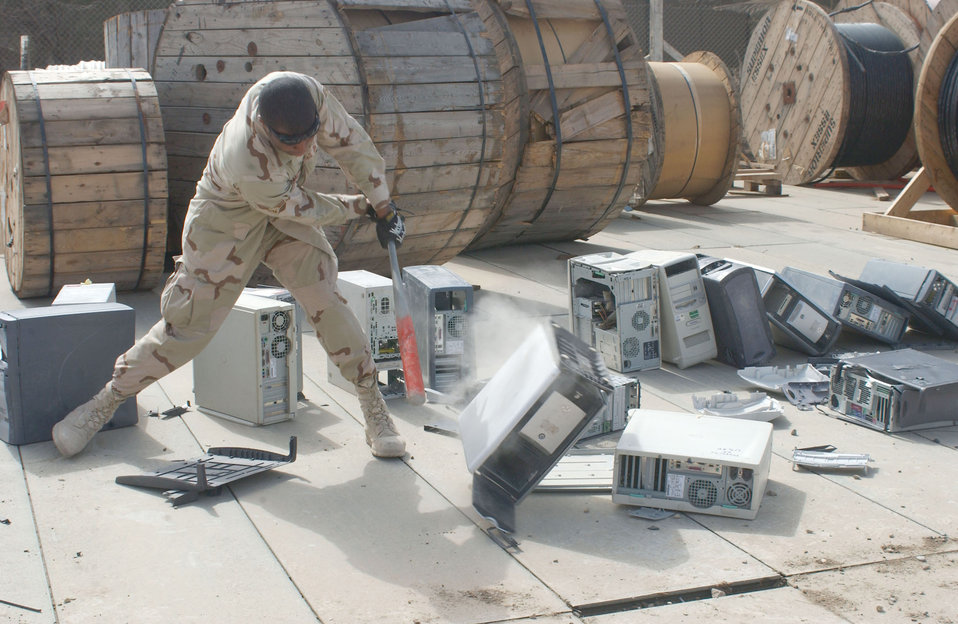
Have you ever want to?

TALLIL AIR BASE, Iraq -- Senior Airman Nicholas Sanders smashes a printer during a computer destruction party here April 16. Airman Sanders is assigned to the 407th Communications Squadron.